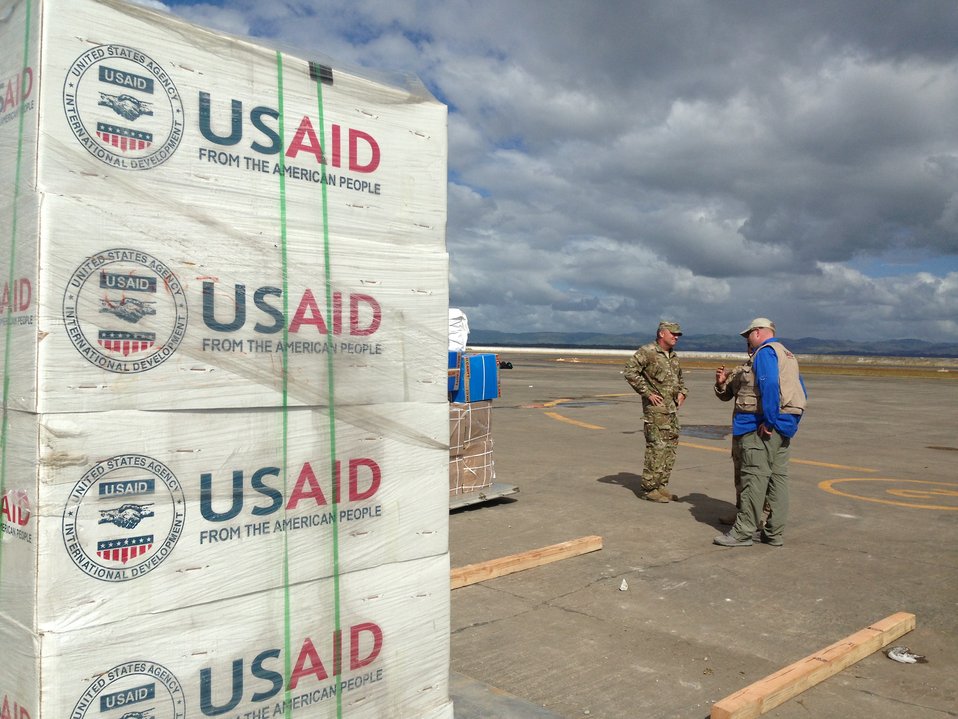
Emergency Supplies Arrive in Manila

Emergency supplies, such as plastic sheeting and hygiene kits, arrive in Manila from USAID's emergency warehouse in Dubai on November 16, 2013. The supplies are transported by the U.S. military to hard-to-reach areas.